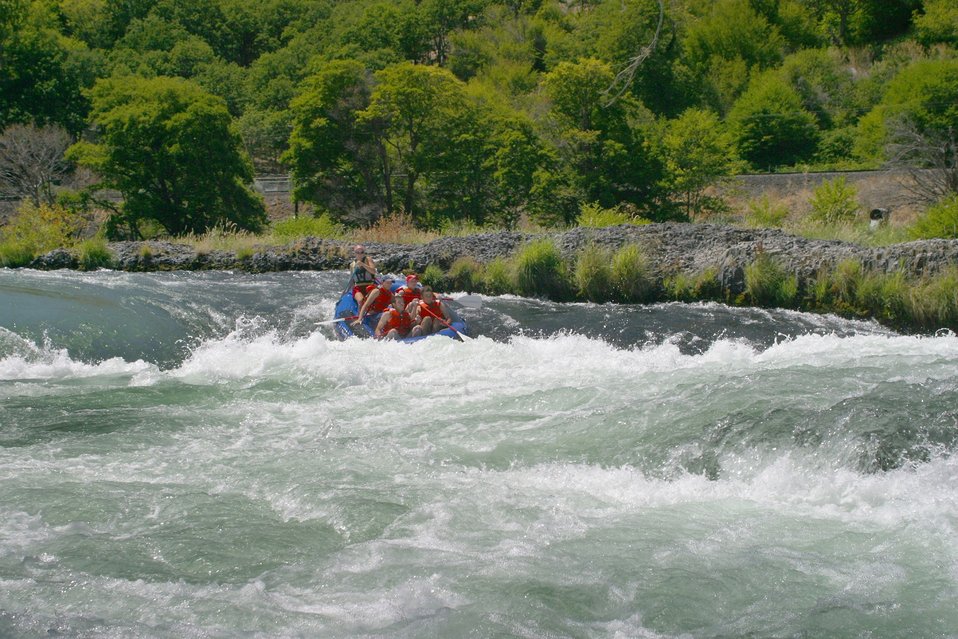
Oak Springs is a Class IV Rapids. The left channel has shallow rocks, large standing waves, turbulent currents and a large hole during high flows. The right channel has a large hole, shallow rocks, and turbulent currents. 7/26/03 Pelton Dam 3600 cfs: Moody Rapids 4300 cfs.